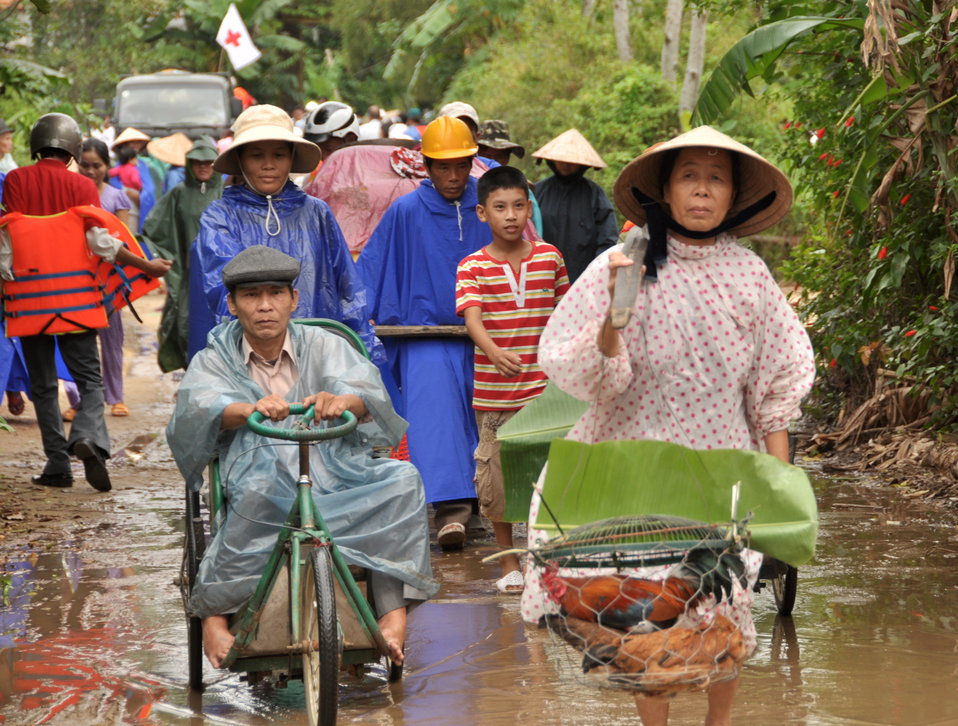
USAID and Save the Children support community evacuation drill and emergency preparedness in central Vietnam

Loc An Commune, Phu Loc District, Thua Thien Hue Province
December 4, 2012, Photo: Richard Nyberg, @USAIDVietnam